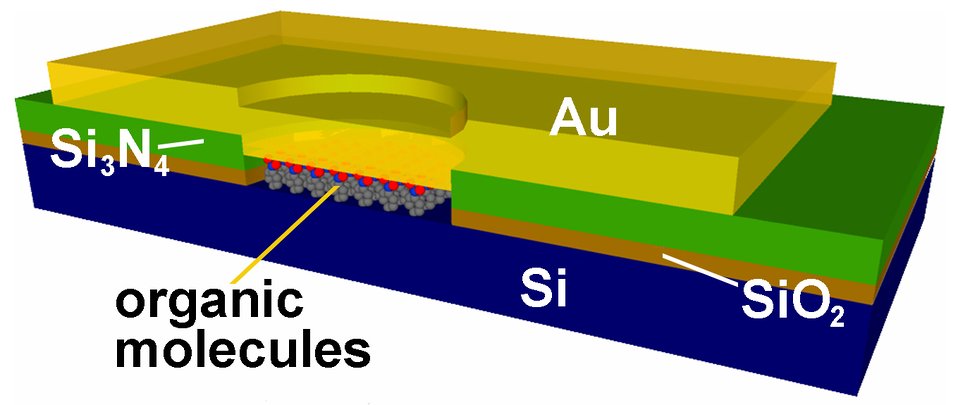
Molecular Electronic Junctions

A team of NIST and Purdue researchers used an unusual spectroscopic technique to show that electric current passes through the organic molecules in silicon-molecule-metal structures, or junctions.